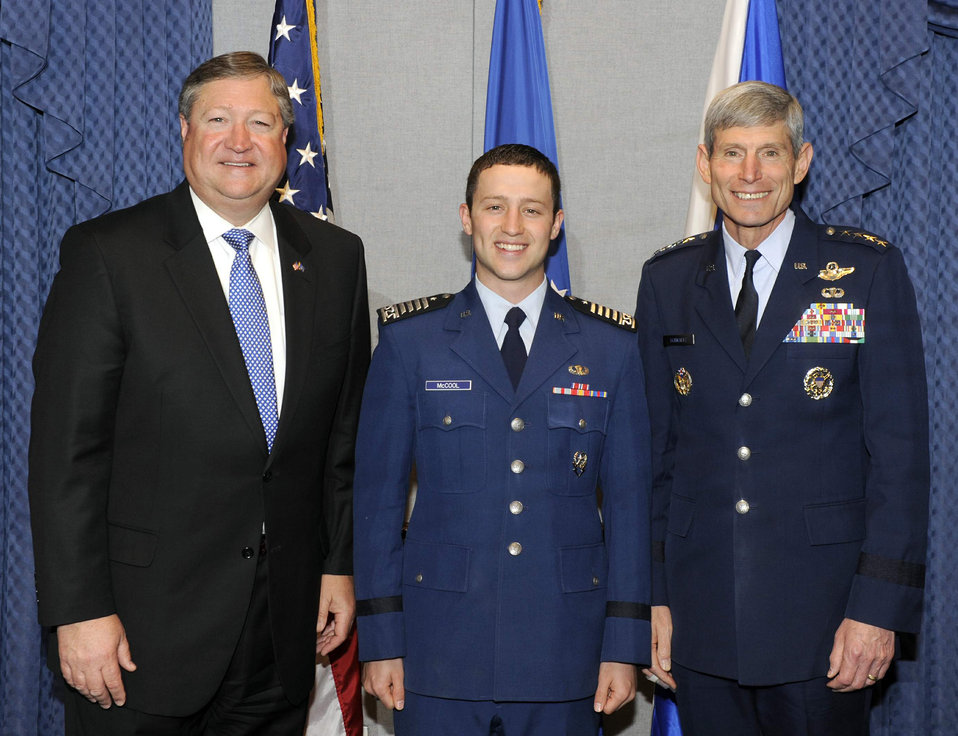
2010 U.S. Air Force Cadet of the Year

Secretary of the Air Force Michael Donley, Air Force Academy Cadet Christopher J. McCool and Air Force Chief of Staff Gen. Norton Schwartz stand for a photo during the 2010 U.S. Air Force Cadet of the Year ceremony May 12, 2011, at the Pentagon. Cadet McCool earned the honor for demonstrated excellence in military skill, academics and athletics in an Air Force commissioning program.